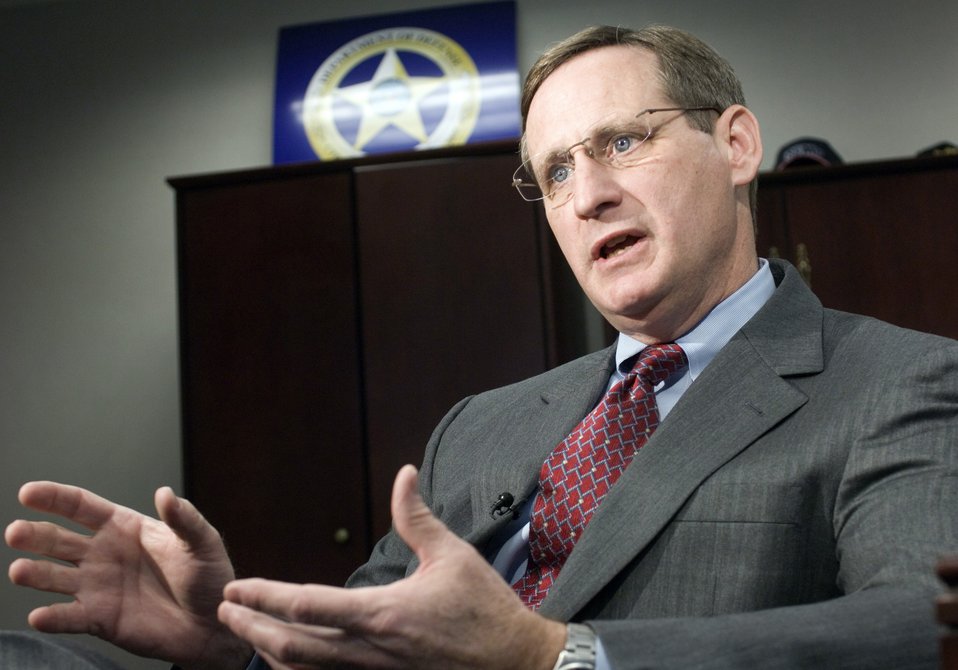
Cyber crime busters

LINTHICUM, Md. (AFPN) -- Steven Shirley explains the mission of the Defense Computer Cyber Crime Center here Jan. 30. Mr. Shirley is the center's executive director.